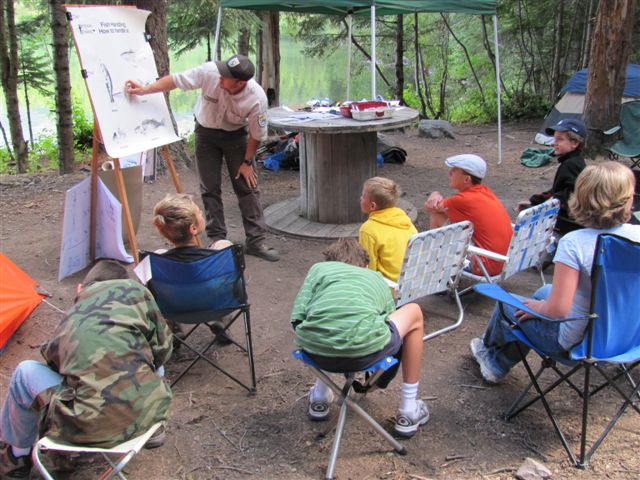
Outdoor Classroom

Creston National Fish Hatchery provides many educational opportunities for area schools and families.